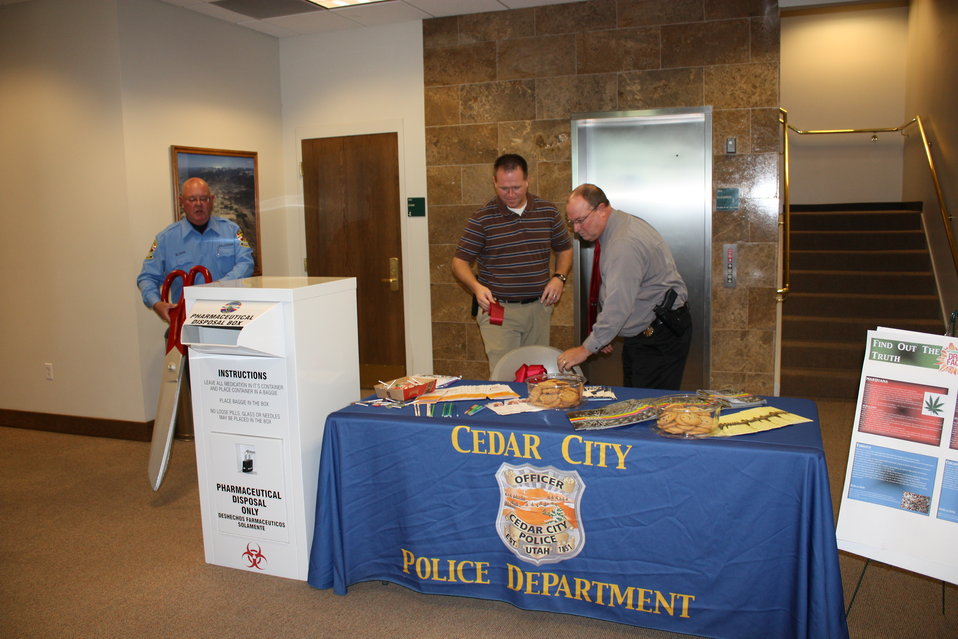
NDFW Assembly in Cedar City, UT

The students signed a pledge to be drug and alcohol free.